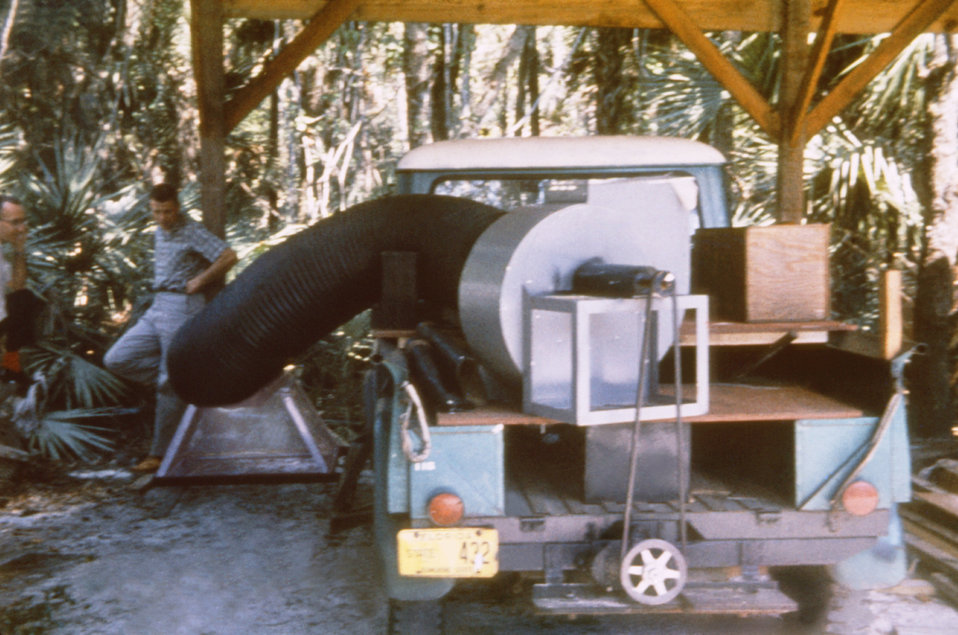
This is a 1965 photograph of a giant mosquito vacuum mounted on truck used in collecting mosquitoes alongside residential areas.